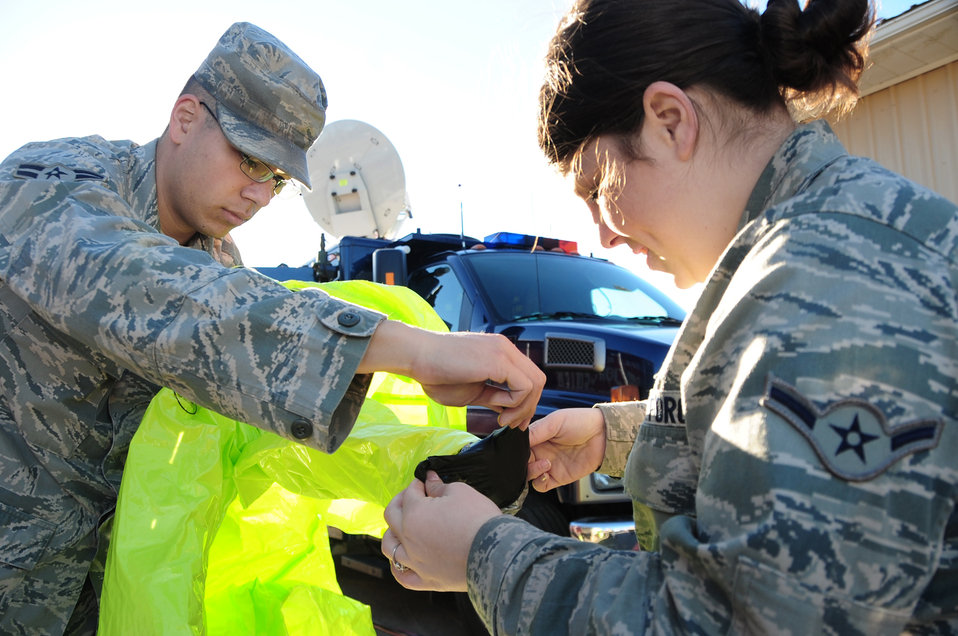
Ellsworth joint training

Airman 1st Class Matthew Hung puts on a chemical protection suit while Airman Francheska Rebardi assists him during a joint training mission with members of the Army National Guard and the Rapid City Fire Department Nov. 4, 2010, in Rapid City, S.D. Airmen from Ellsworth Air Force Base, S.D. utilize this training scenario to improve their skills not only with their job but also improve their skills working with other agencies. 28th Civil Engineering Squadron emergency management journeyman, 28 CES emergency management apprentice